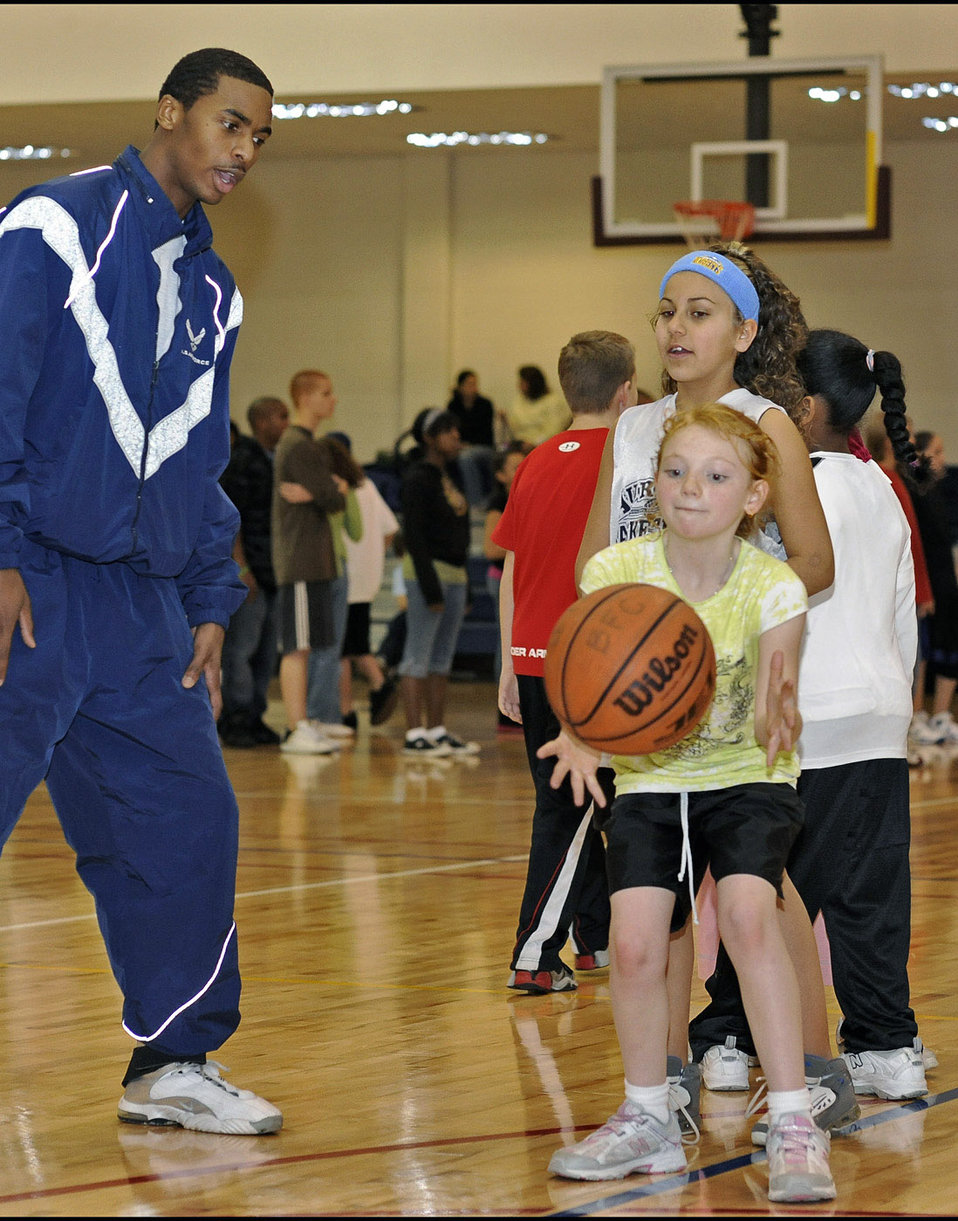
Shaq shares hoops clinic with Buckley children

Airman 1st Class Jarrod Jemison teaches passing skills during a military youth basketball clinic Jan. 14 at the fitness center at Buckley Air Force Base, Colo. Shaquille O'Neal of the Phoenix Suns was a special guest for the clinic. Airman Jemison is assigned to the 460th Space Wing Public Affairs Office.